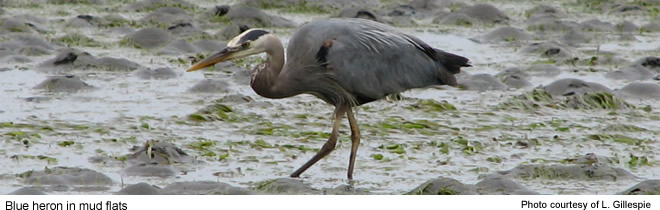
Blue heron - Willapa NWR

Mudflats are just one distinct type of ecosystems found at Willapa NWR.